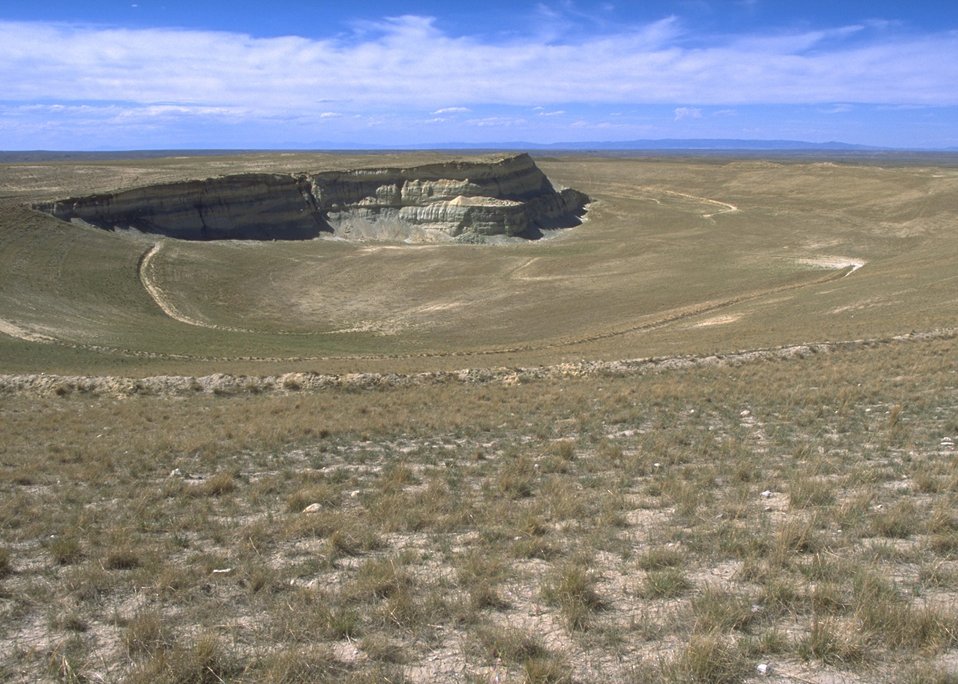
Gas Hill Abandoned Mine Lands in various stages of rehabilitation, Lander Field Office.